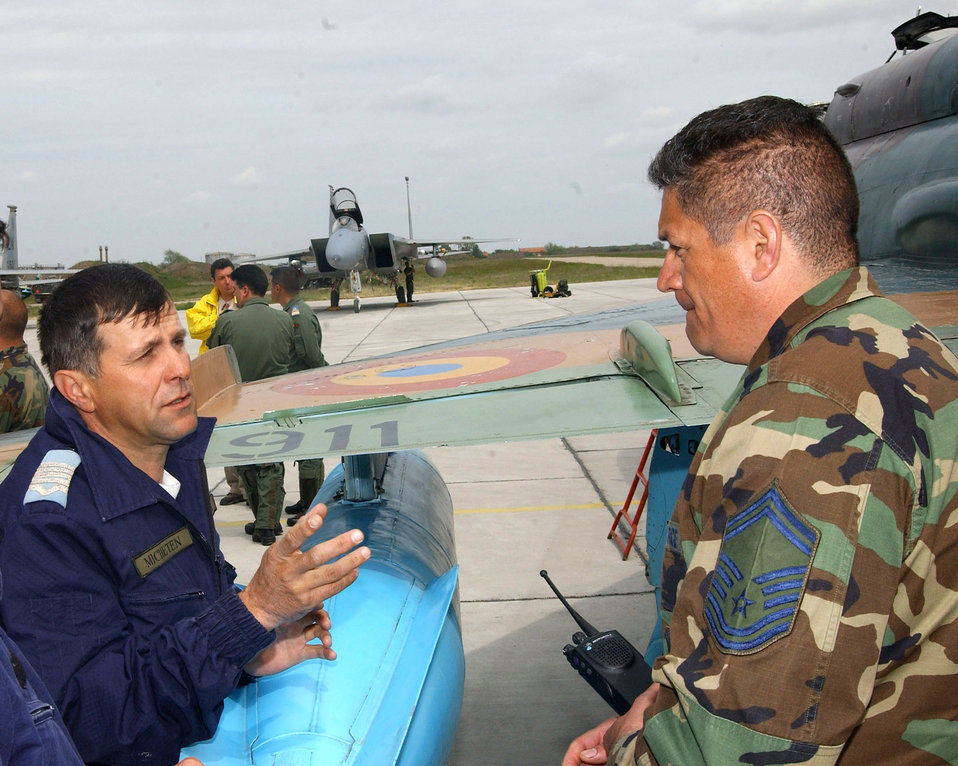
Air Force gains larger presence in Romania

Romanian Air Force Warrant Officer Marian Micheten (left) discusses the maintenance side of MiG-21 operations with Senior Master Sgt. Santos Rodriguez during Exercise Sniper Lance May 1 at Mihail Kogalniceanu Air Base, Romania. The exercise is the first since U.S. and Romanian officials signed a Presence Agreement, which allowed for the presence of U.S. forces at Romanian bases beginning in 2007. Warrant Officer Micheten is a technician with the 862nd Squadron. Sergeant Rodriguez is the 493rd Aircraft Maintenance Unit lead production superintendent.